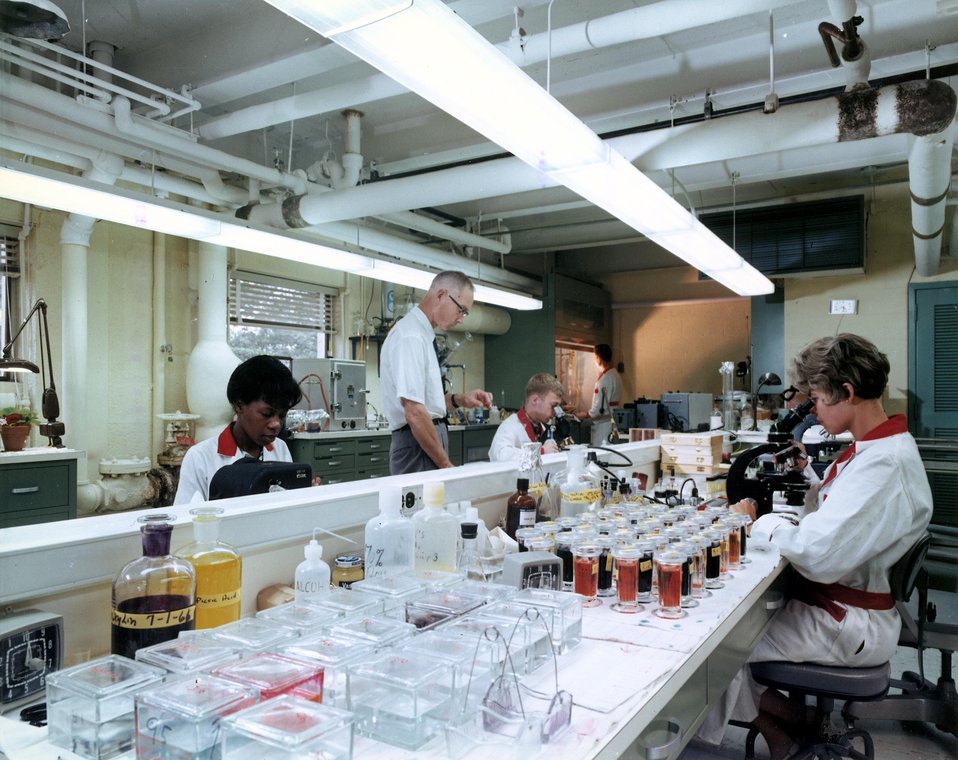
General view of the cytology laboratory in which cells are stained and otherwise treated in such a way that differences between cells from irradiated, normal, young and old mice are made apparent. This is part of the study of the acceleration of aging which occurs in animals as a result of a dose of radiation. c. 1966